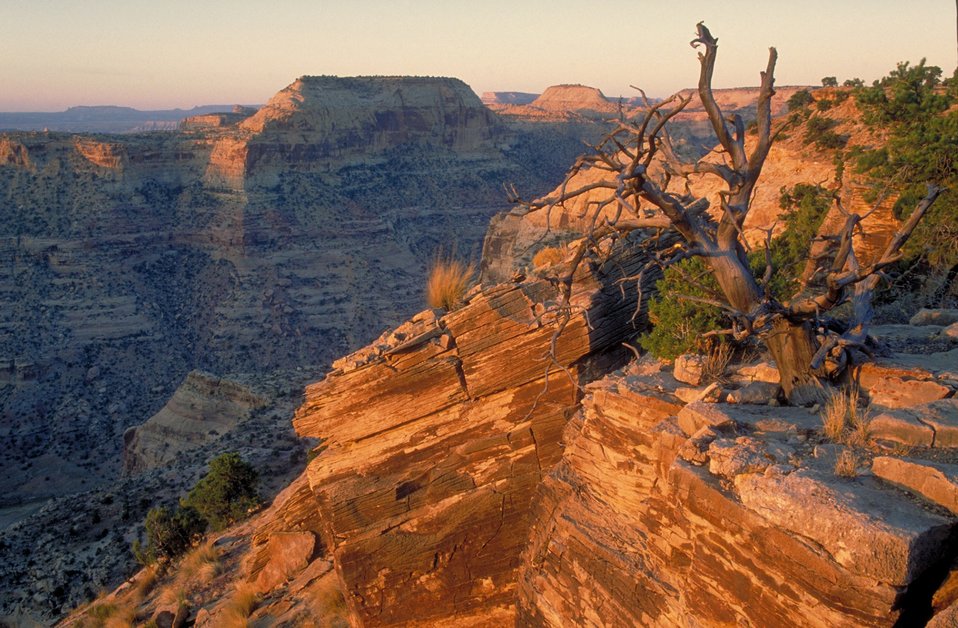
The Wedge Overlook, San Rafael Swell.